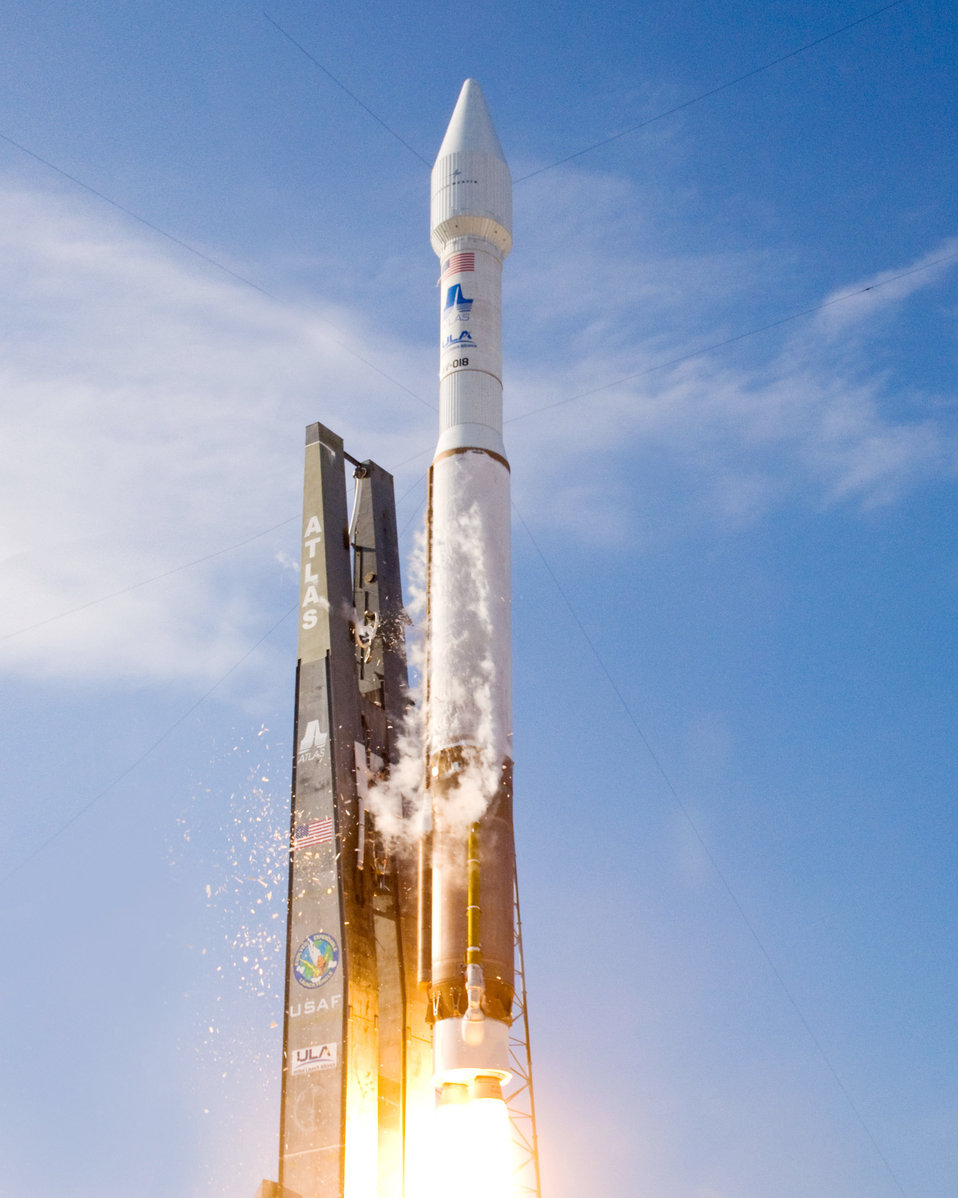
Air Force officials launch Atlas V rocket lifting government communications satellite

A United Launch Alliance Atlas V rocket launches from Space Launch Complex-41 at 5:35 p.m. Sept. 8, 2009, from Cape Canaveral Air Force Station, Fla.